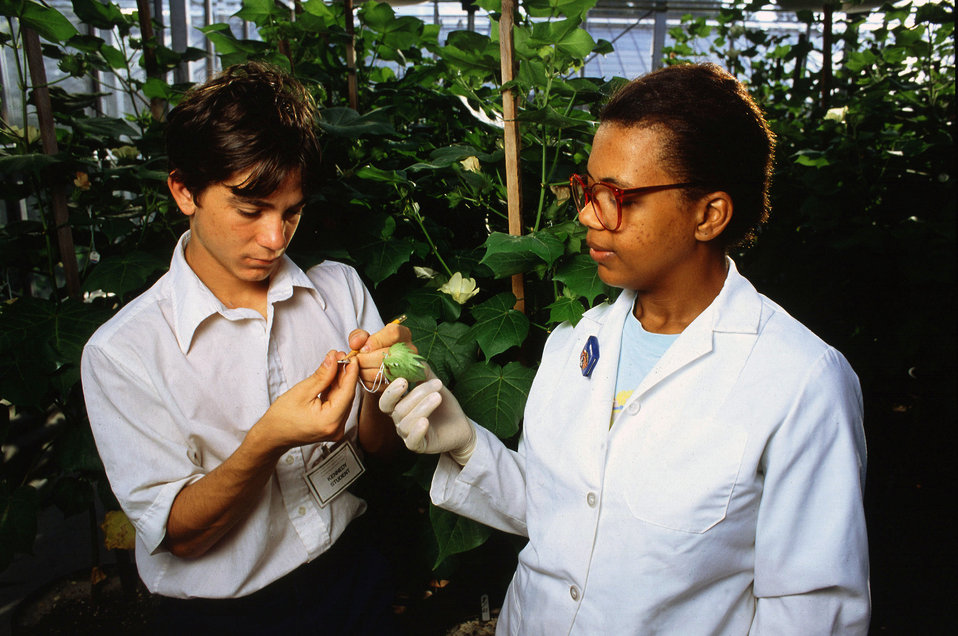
U.S. Department of Agriculture (USDA) Agriculture Research Service (ARS) lab technician Debra Williams and Kennedy high school student Sean Gros label cotton bolls for identification.